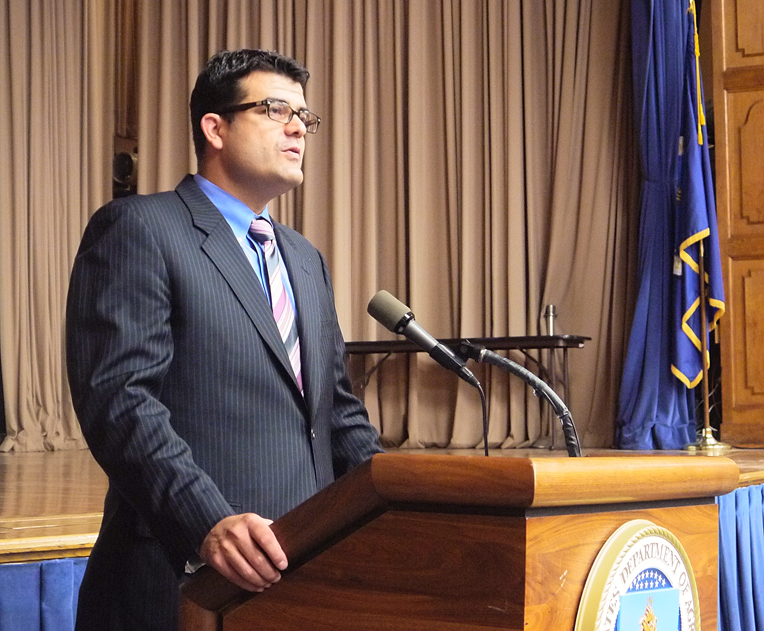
During a town hall meeting at USDA Headquarters, Administrator John Padalino explains a new proposed rule that opens the door to financing both smaller and renewable energy projects by USDA. The rule could help utilities reduce costs to customers. Comments are being accepted through July 30th.